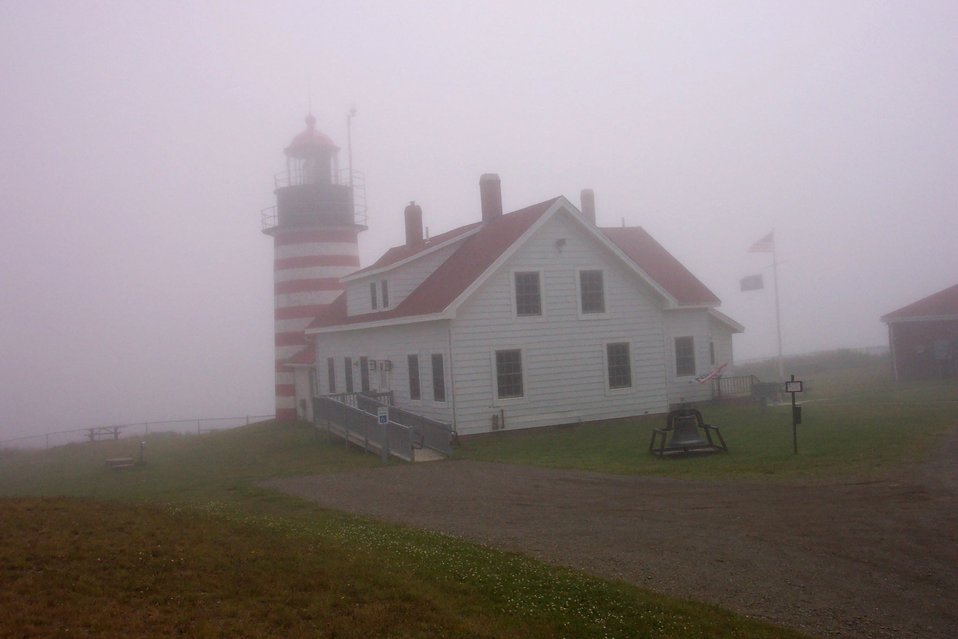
West Quoddy Head Lighthouse, the easternmost point in the contiguous United States.